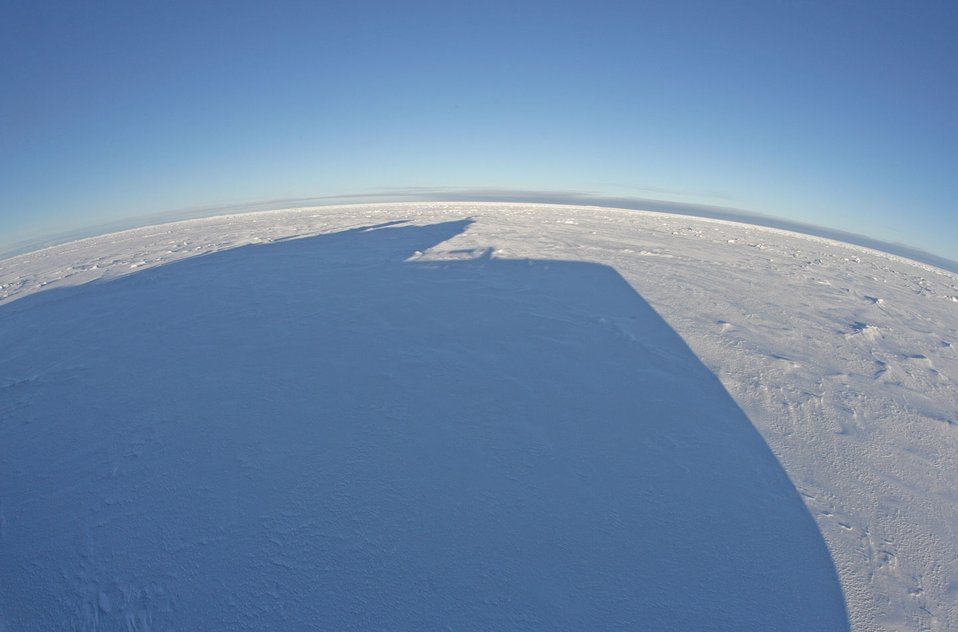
Shadow of the pilot house of the KAPITAN DRANITSYN on the ice.